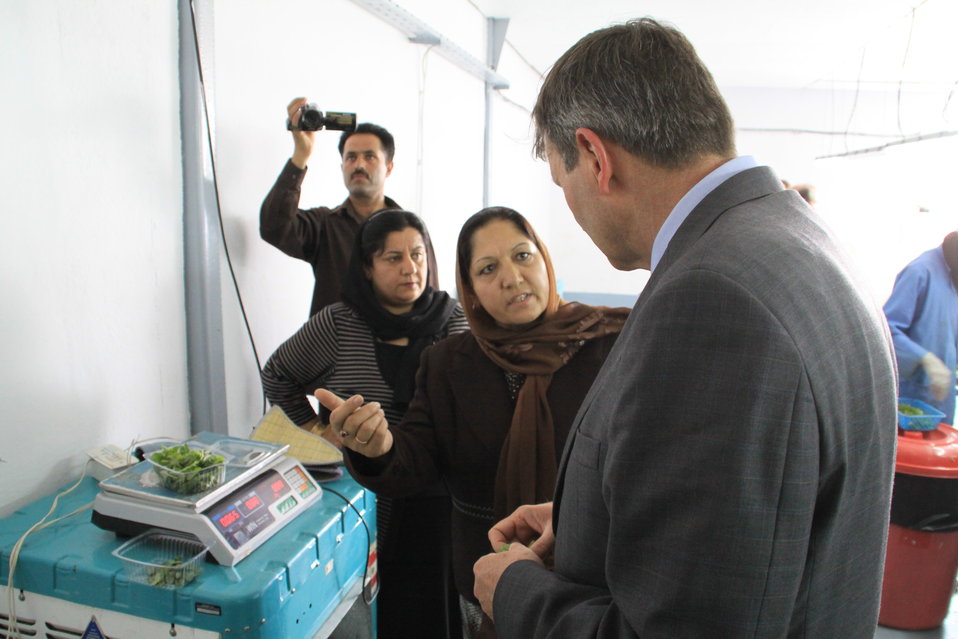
Badam Bagh Farm